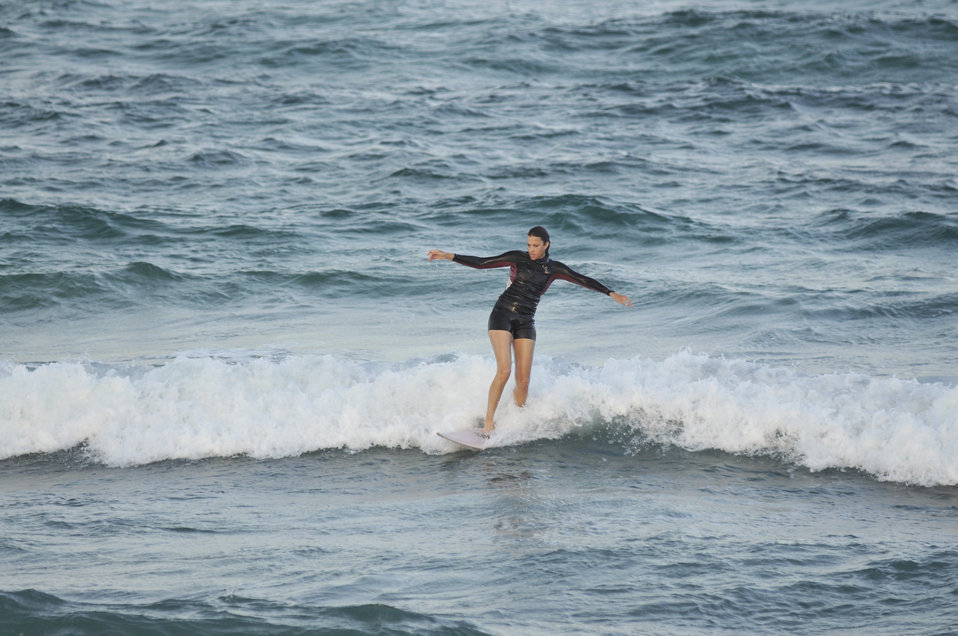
Surfing is a popular sport along the southern Florida coast on April 8, 2010.